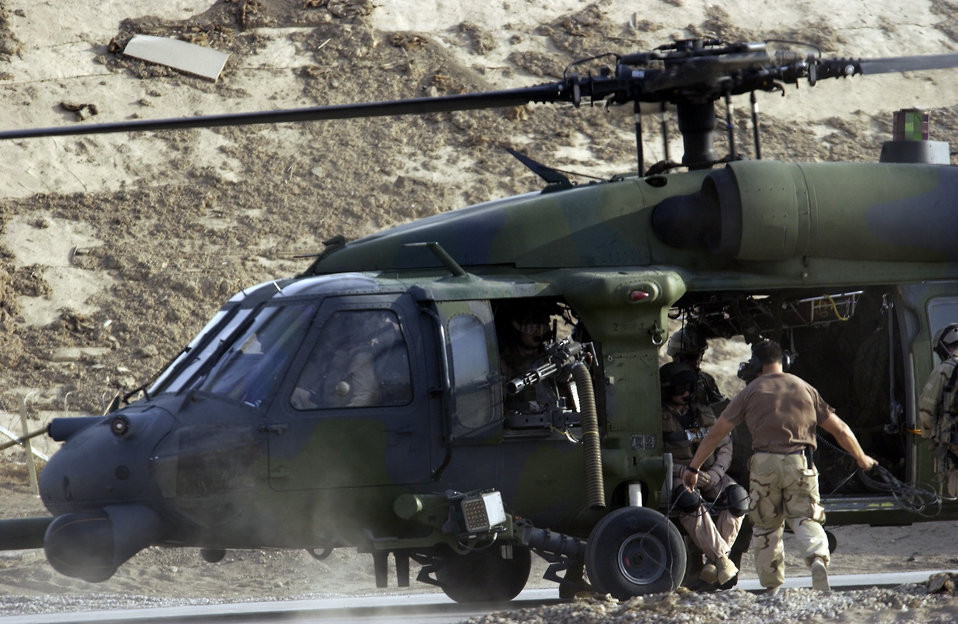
Ready to help

BAGHDAD INTERNATIONAL AIRPORT, Iraq -- Pararescuemen and aircrew members from the 101st Expeditionary Rescue Squadron here prepare an HH-60 Pave Hawk for lift off in response to the bombing of the Baghdad Hotel on Oct. 12. The airmen are deployed from the New York Air National Guard.